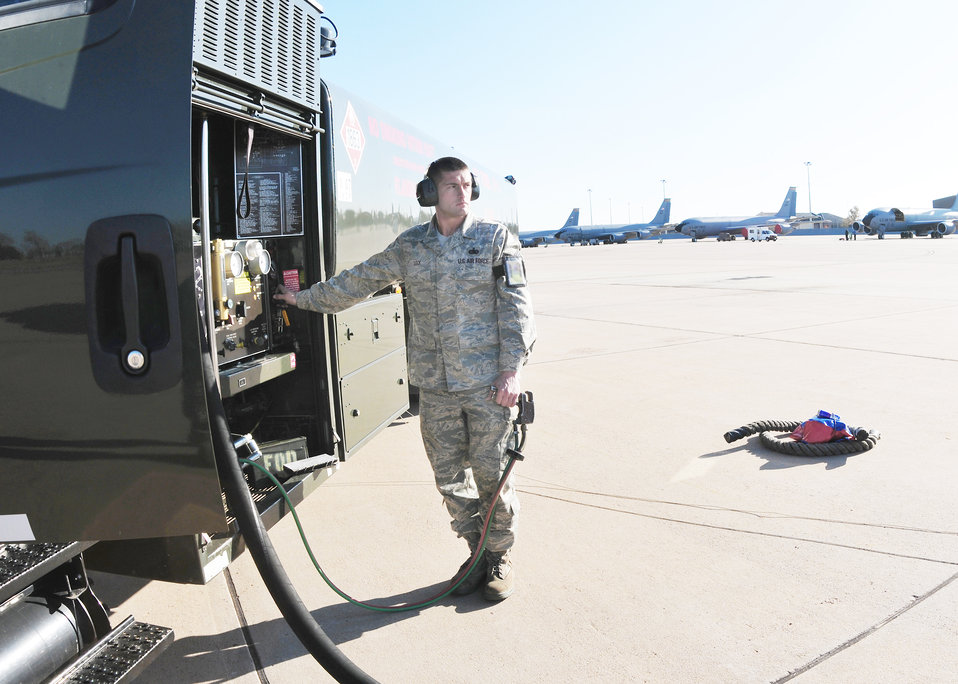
Canadian forward air control training

Staff Sgt. Tommy Lock, a 97th Logistics Readiness Squadron refueling specialist at Altus Air Force Base, Okla., refuels a Canadian CF-18 Hornet Dec. 4, 2009. The Canadians are staging out of Altus AFB while conducting forward air control training at nearby Fort Sill.